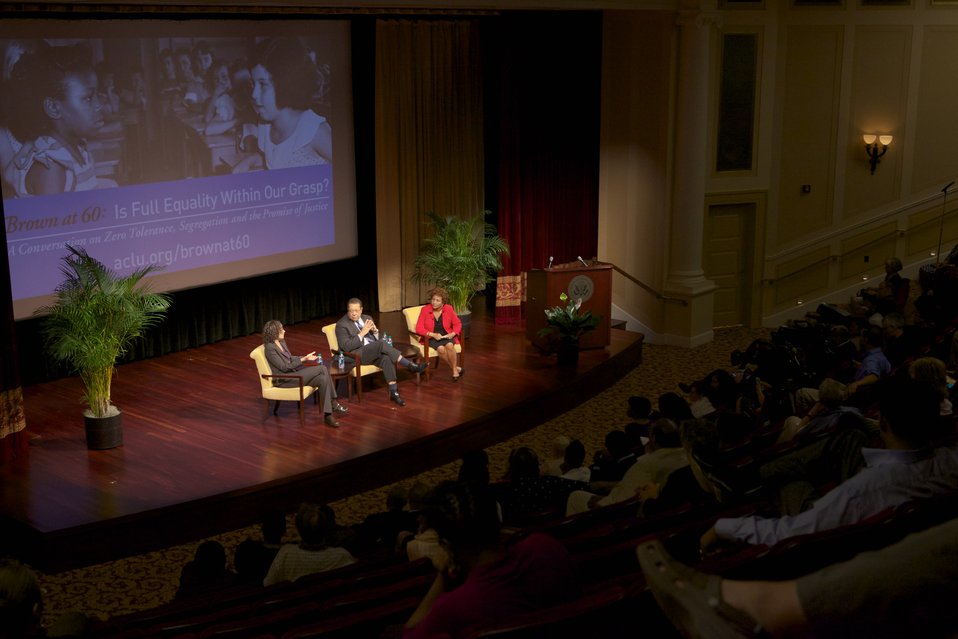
Brown at 60: Is Full Equality Within Our Grasp? A Conversation on Zero Tolerance, Segregation, and the Promise of Justice